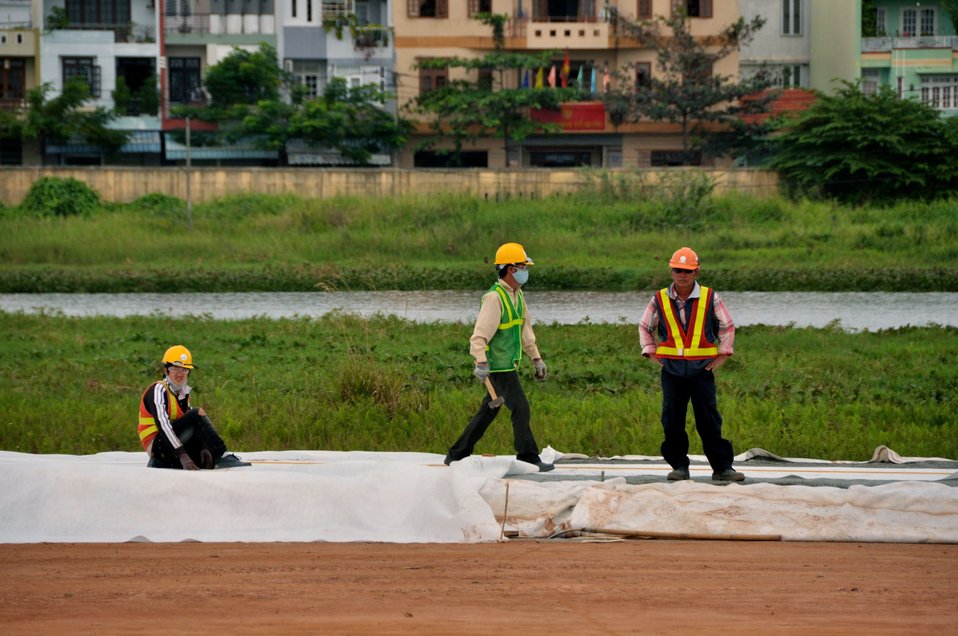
Site Preparation for Environmental Remediation of Dioxin Contamination at Danang Airport

Danang Airport Danang Airport, January 22, 2013

Photo: Richard Nyberg @USAIDVietnam
Remediation Site Visit